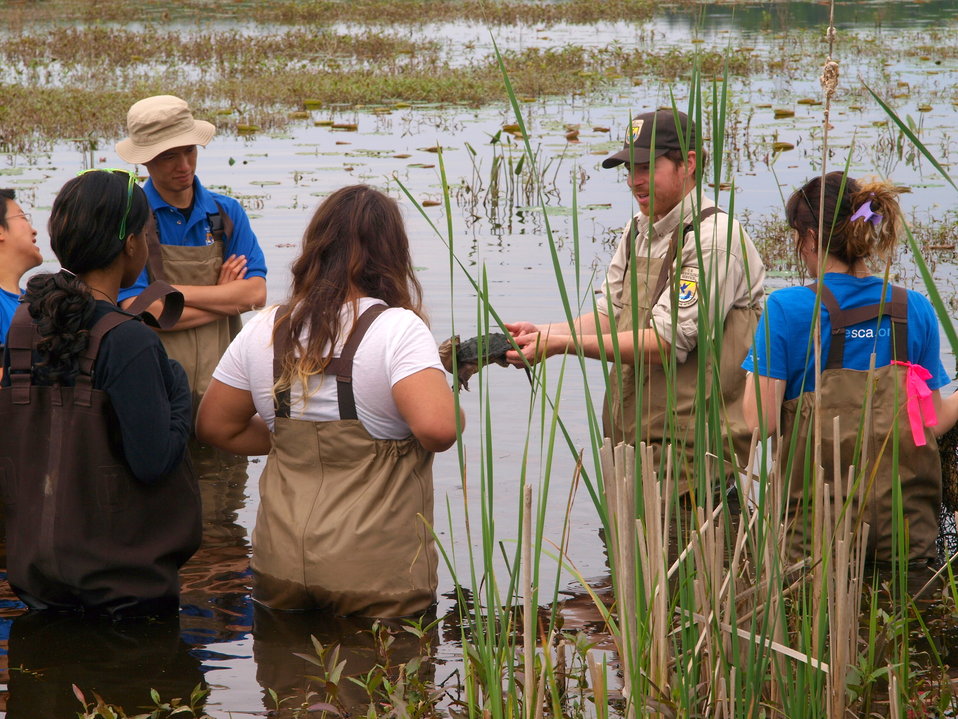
Biology Unit